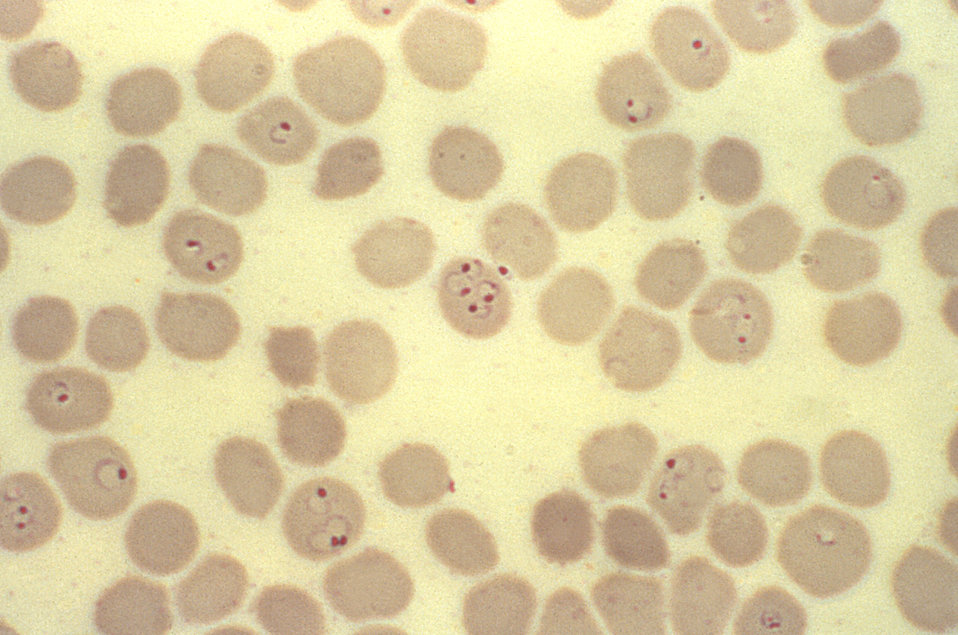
This thin film Giemsa stained micrograph reveals a number of ring-form staged Plasmodium falciparum trophozoites.